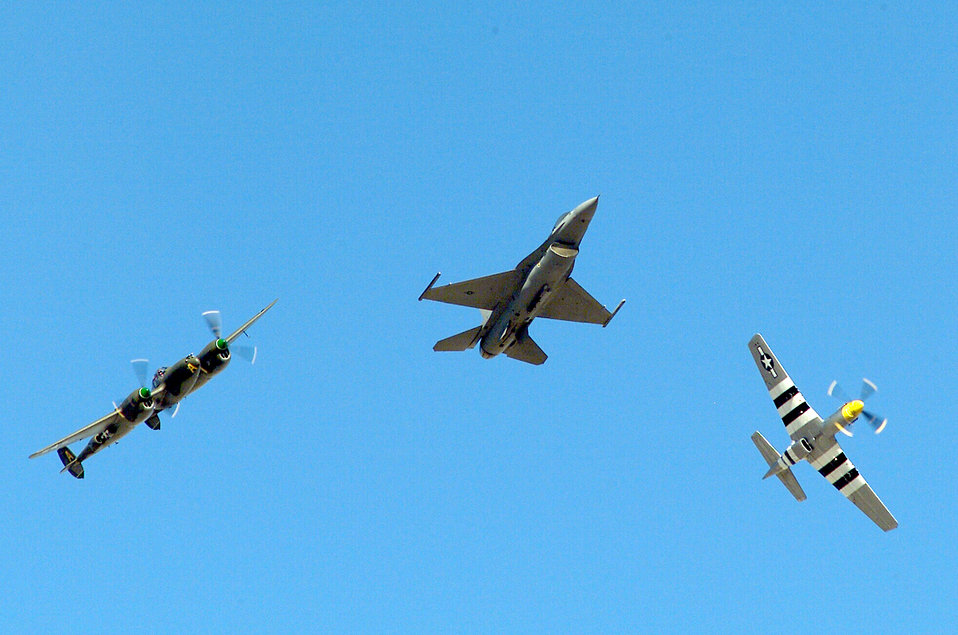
P-51 Mustang

DAVIS-MONTHAN AIR FORCE BASE, Ariz. (AFPN) -- An Air Force F-16 Fighting Falcon completes a formation practice flight with a P-38J Lightning (left) and P-51 Mustang during the Heritage Flight Conference held here recently. The Heritage Flight Conference is designed to train and certify the Air Combat Command A-10 Thunderbolt II, F-15 Eagle and F-16 demonstration pilots to fly in formation with historical aircraft.